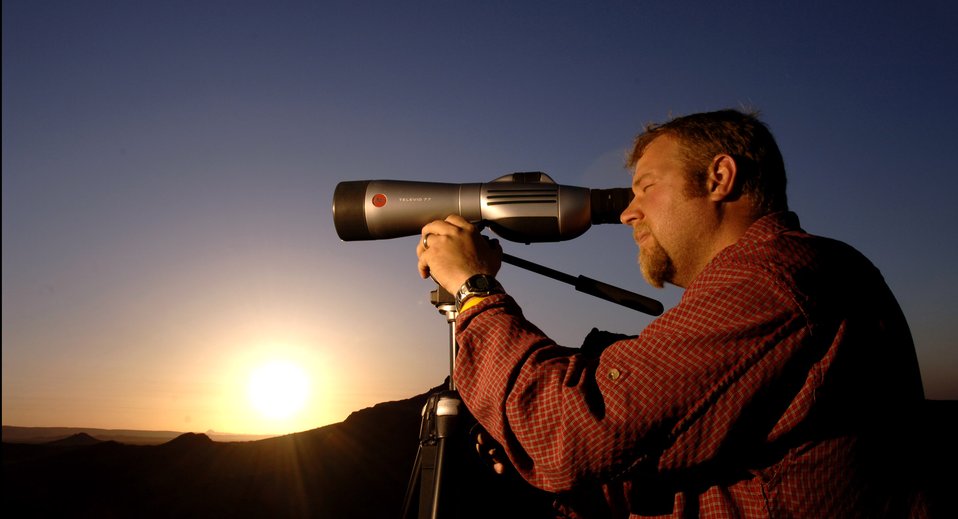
Wildlife monitors help protect endangered species

Erik Stenehjem conducts routine pronghorn clearance at the Barry M. Goldwater Range in Phoenix, Ariz., at 4:30 a.m. Monday, April 24, 2006. Once no sign of the pronghorn antelope is found, mission bombings and strafing can continue on the range. Mr. Stenehjem is the lead biologist for pronghorn monitoring.